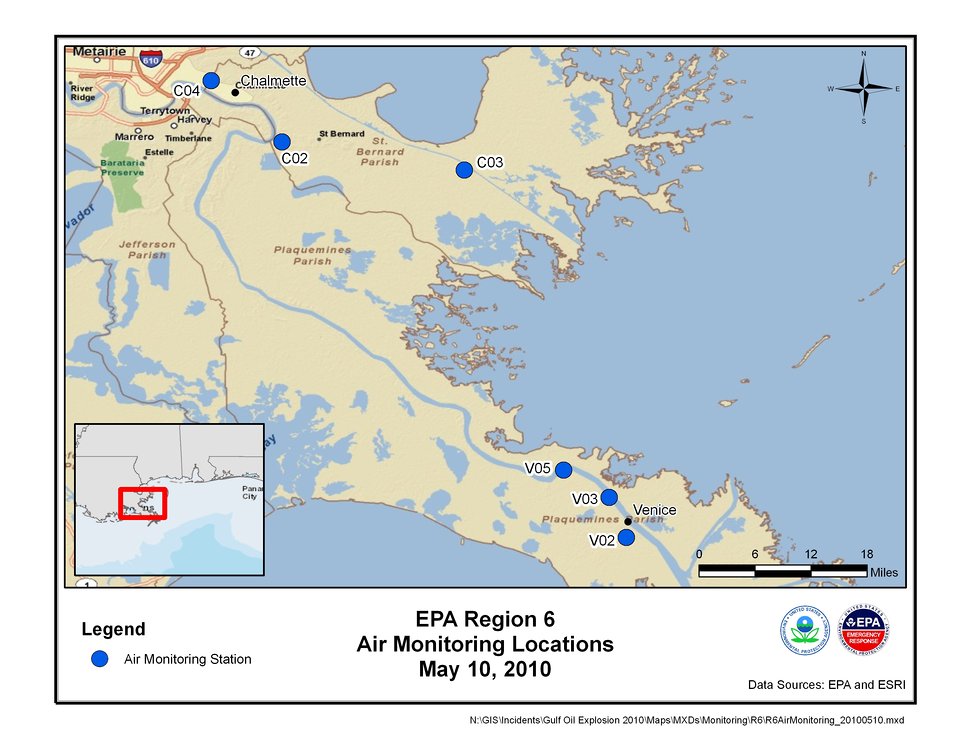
EPA Air Monitoring Locations May 10, 2010